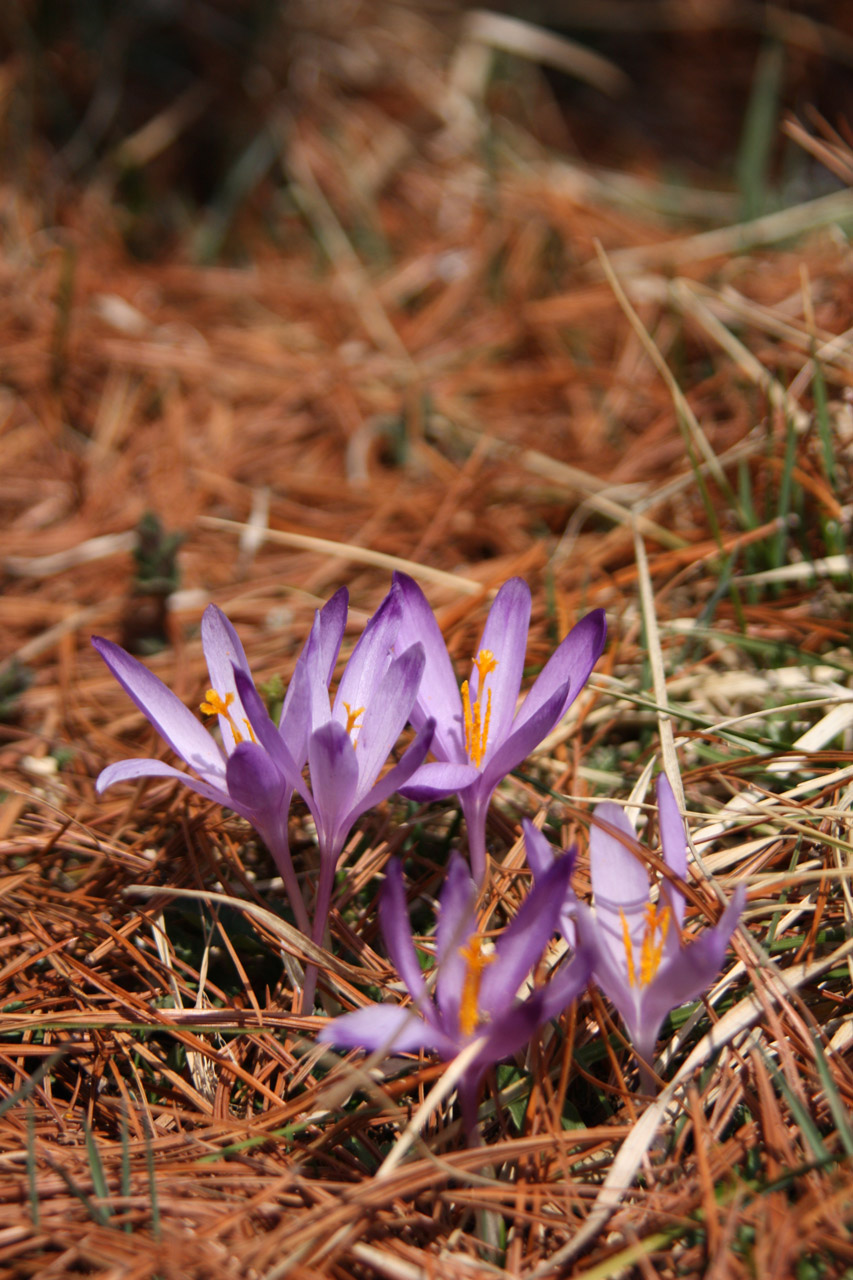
Crocuses in woodland.